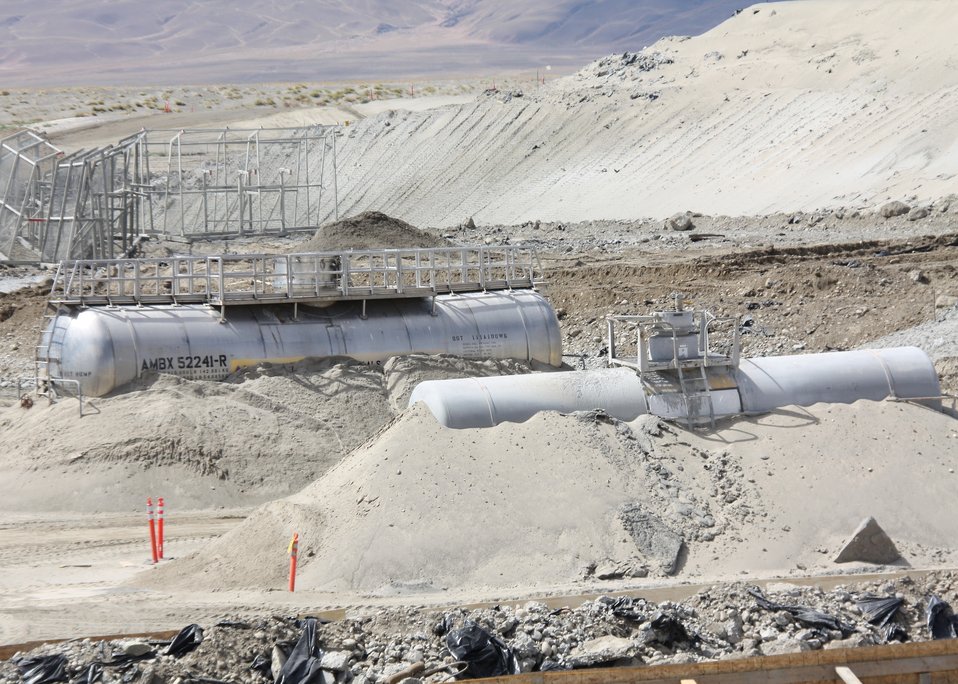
Hanford Completes Recovery Act Project Under Budget, Ahead of Schedule

Washington Closure Hanford disposed 11 railcars from the Hanford Site at the Environmental Restoration Disposal Facility. Two of the railcars were tankers, pictured here.